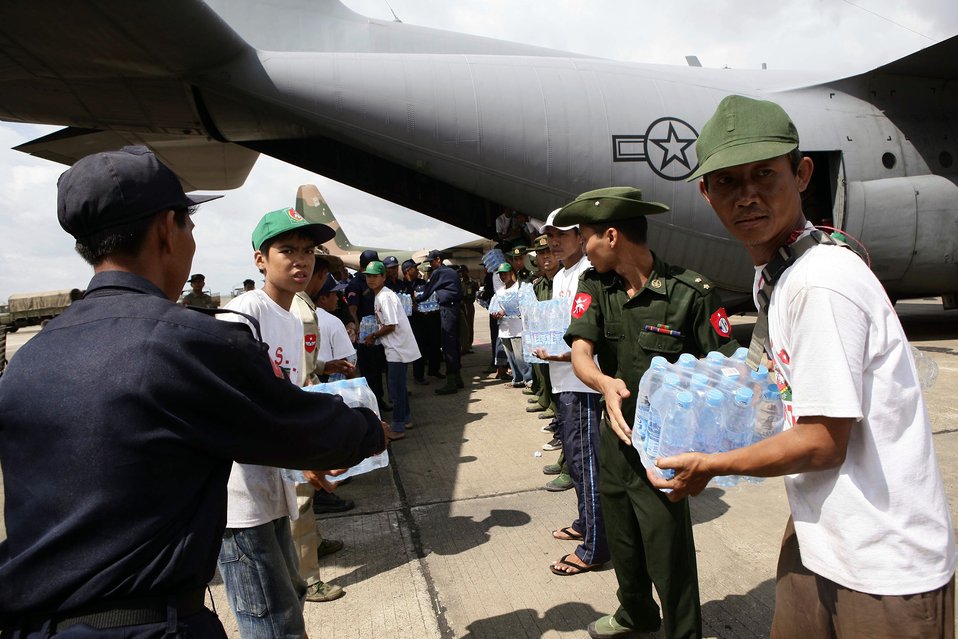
First C-130 crew provides humanitarian assistance to Burma

Burma servicemembers form a line to carry water supplies off a U.S. Air Force C-130 Hercules May 12 at the Yangon International Airport in Burma. The plane carrying water, food and medical supplies provided relief to Burma, which was struck by Cyclone Nargis May 2.